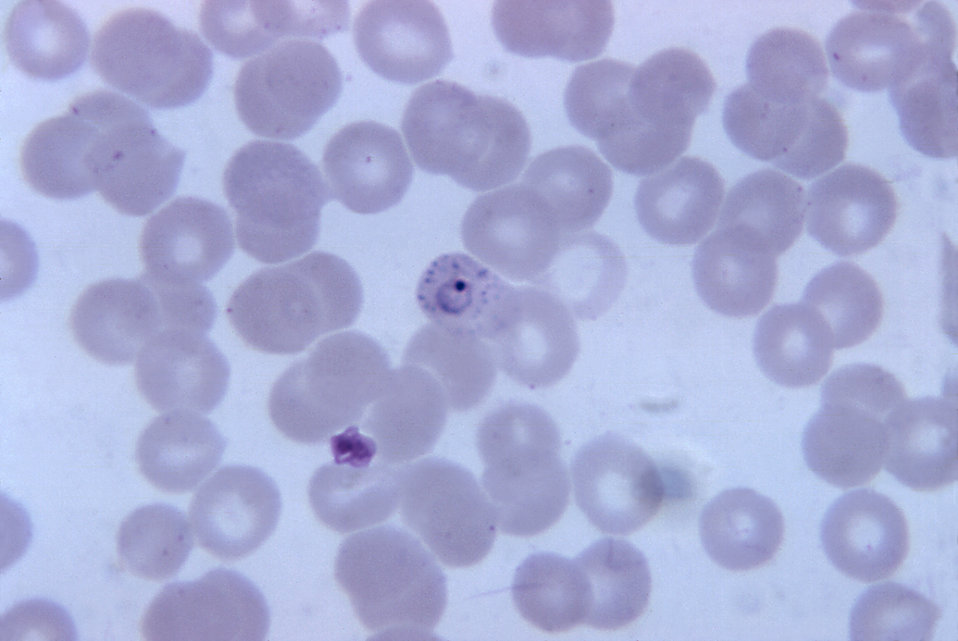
This thin film micrograph depicts a P. vivax ring with basophilic stippling in the RBC, using Giemsa stain; Mag. 1125X.